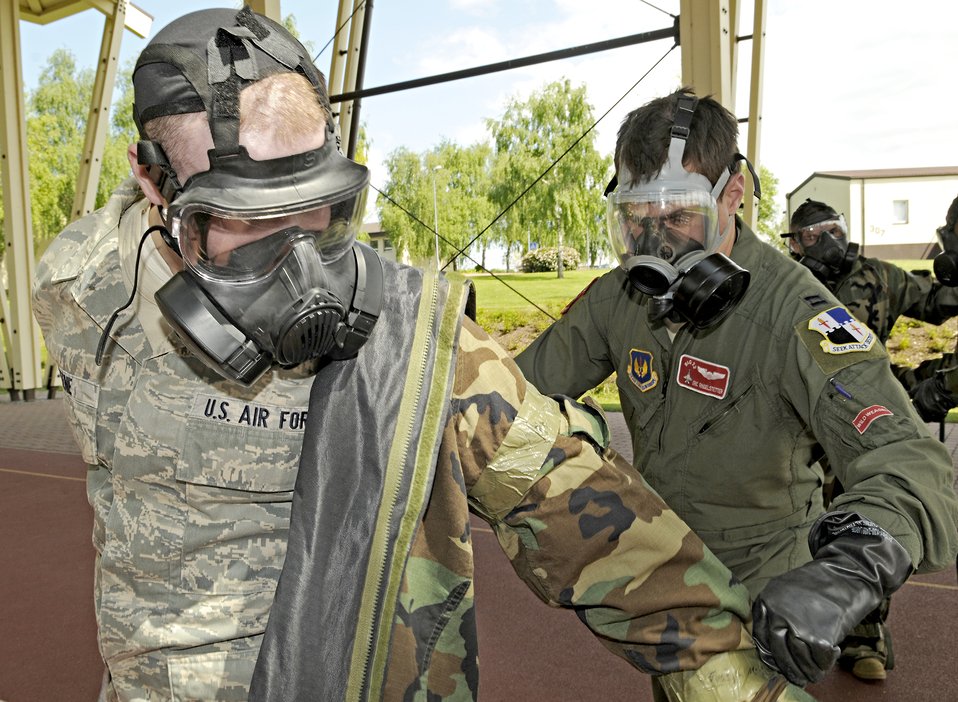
Airmen practice contamination control

Capt. Eric Ringelstetter removes a